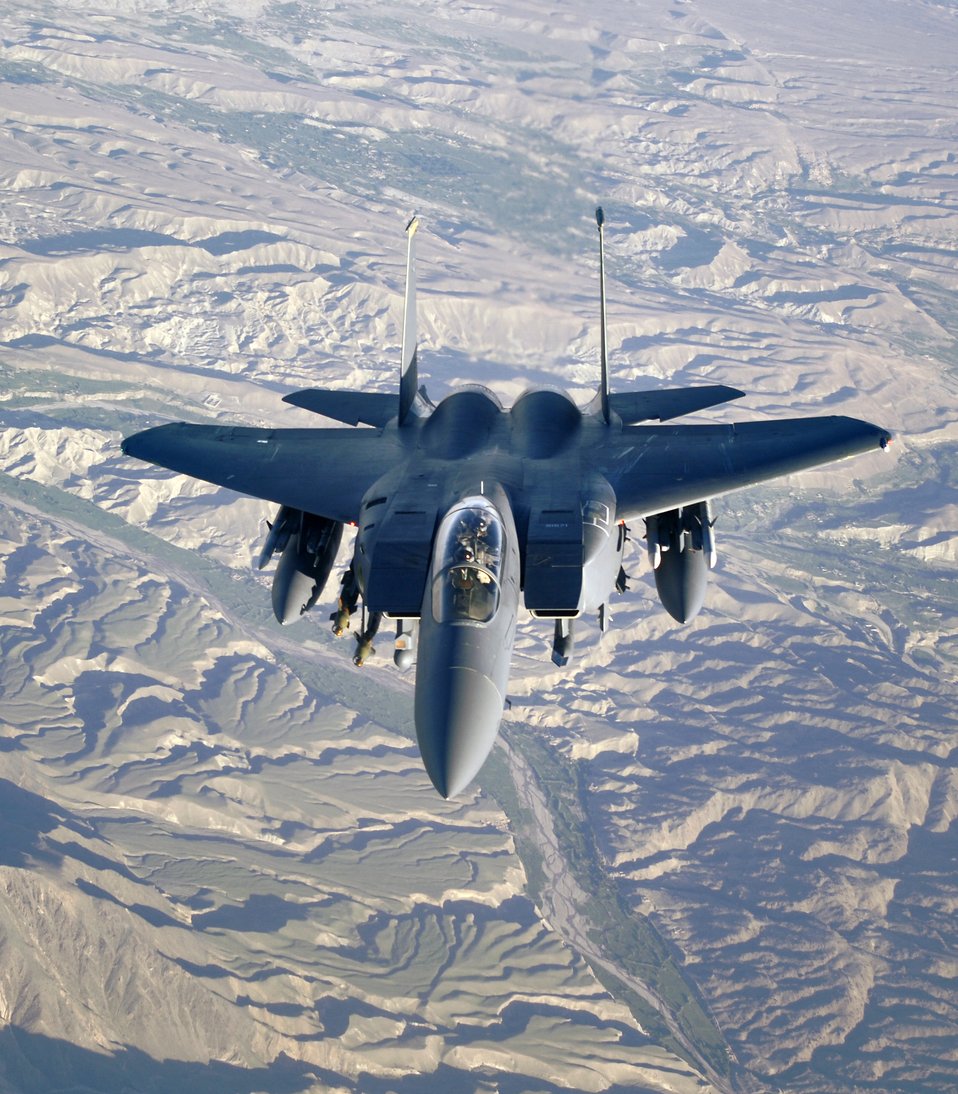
March 12 airpower summary: F-15Es interrupt mortar attack

An F-15E Strike Eagle soars over the mountains of Afghanistan in support of operations in Southwest Asia. The F-15E provides close-air support and aerial overwatch for coalition forces.